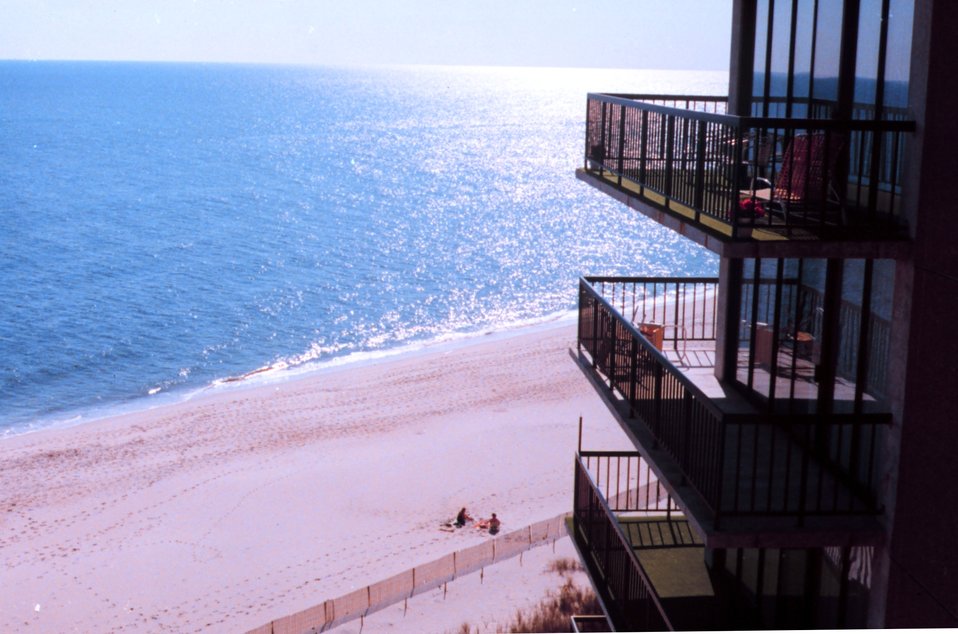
View of a Delaware Beach from an oceanfront condominium